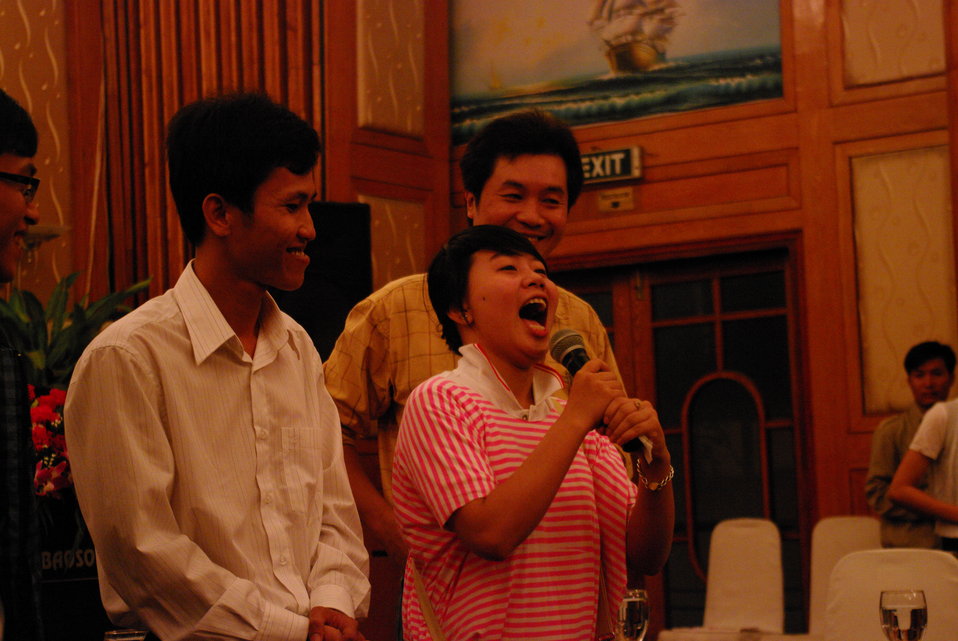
USAID Supports HIV Awareness among Street Youth and Young Men

Trainers and peer educators tell their stories on November 29, 2011, in Hanoi, Vietnam